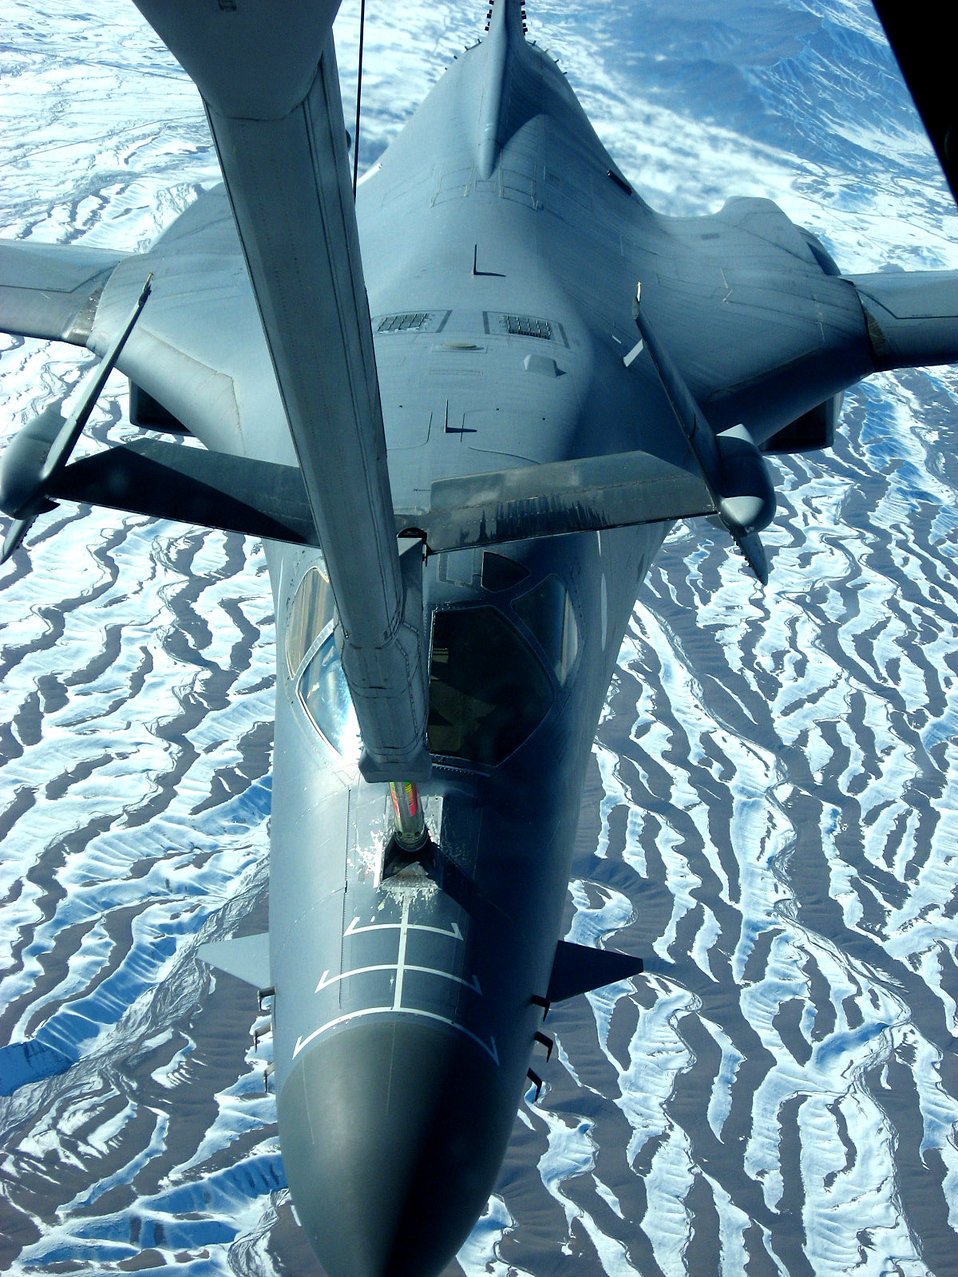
Gas and go

A B-1B Lancer receives fuel from a KC-10 Extender flying over Afghanistan Dec. 14. The tanker is from the 380th Air Expeditionary Wing, home of the largest air refueling wing in Southwest Asia. Unit aircrews fly KC-10s and KC-135 Stratotankers in support of wartime operations.